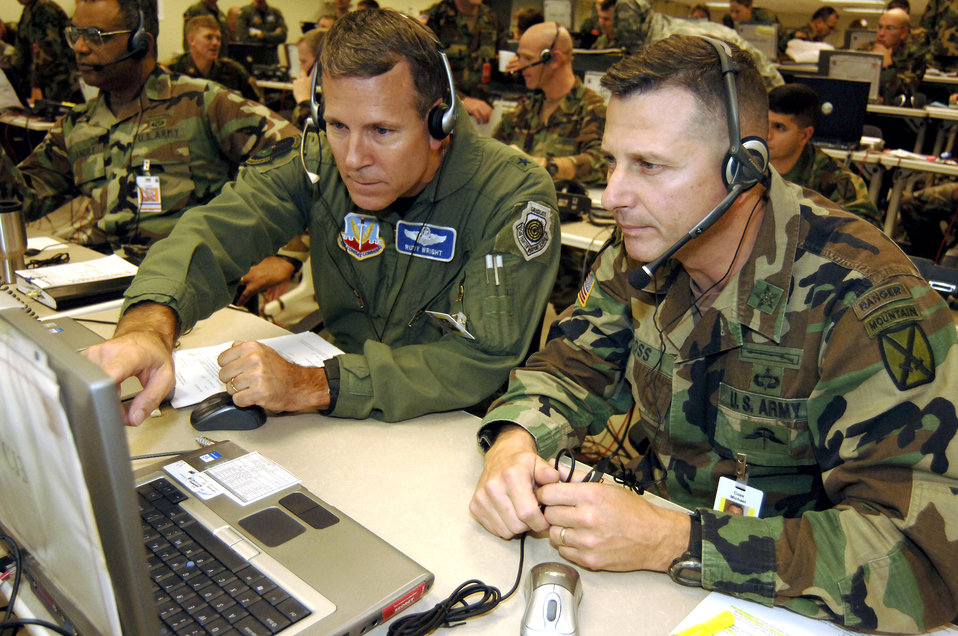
Airmen prepare Army's 10th Mountain Division

FORT DRUM, N.Y. (AFPN) -- Brig. Gen. Rudy Wright (left) reviews a simulated air campaign with Col. Michael Coss during Unified Endeavor 06 here. For the first time in exercise history, an air and space component coordination concept integrated into an operational-level exercise. General Wright, Air Combat Command intelligence director, and Colonel Coss, 10th Mountain Division operations director, made their review Oct. 20.